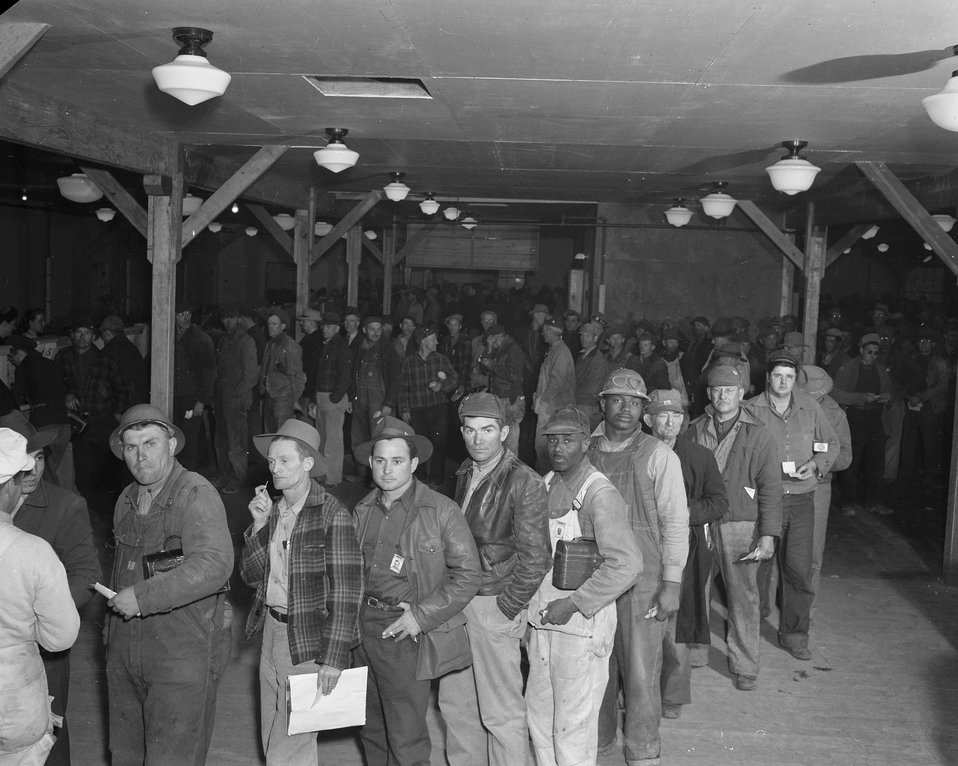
Group Shot

DOE commissioned an exhibit documenting the contributions of African Americans to the Manhattan Project in 2002. The purpose of the exhibit was to commemorate the role of African Americans to the Manhattan Project by way of the Hanford Reservation. The exhibit consists of pictures taken from the Hanford archives and oral histories of African American working at the Hanford starting with wartime emergency construction in 1943, through operations, cold war expansions, and mission diversification.